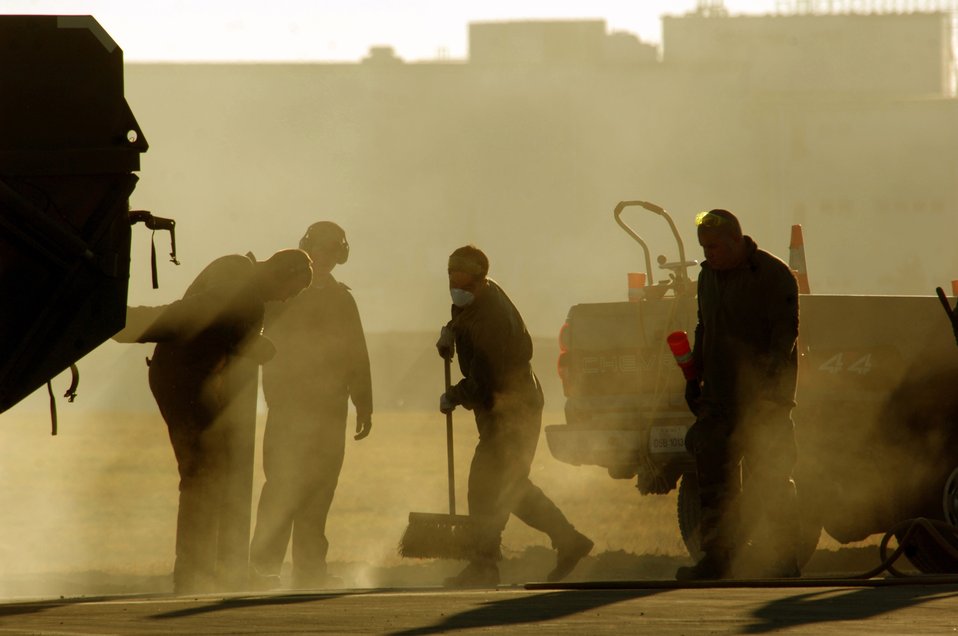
Morning inspection

YOKOTA AIR BASE, Japan (AFPN) -- Airmen conduct an early-morning inspection on the flightline. They are trained to deploy into bare-base locations, assess airfield capabilities, prepare aircraft landing areas, clear obstacles, install emergency airfield lighting systems and repair airfield damage. The Airmen are members of the 374th Civil Engineer Squadron.